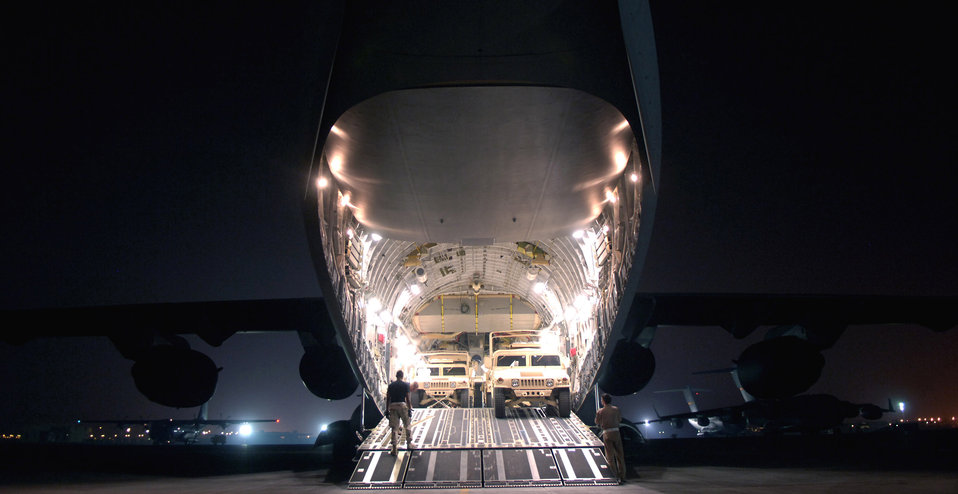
Globemaster operations

Humvees are loaded onto a C-17 Globemaster III at a forward operating base in Southwest Asia. The C-17 is with the 816th Expeditionary Airlift Squadron. The squadron flew more than 1,200 sorties in July, delivering cargo and troops in support of operations Iraqi Freedom and Enduring Freedom.